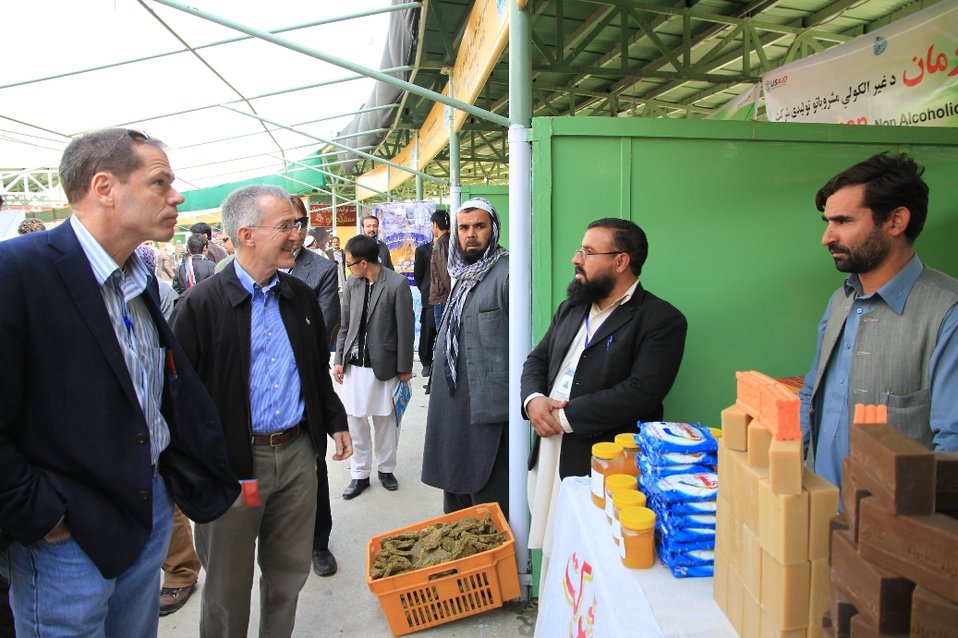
Ag.Fair, October 2013

USAID officials William Hammink (center-left) and Larry Sampler (left) speak with Naqibullah Hamdard and Azizullah, Deputy Director of Kaliwal Soap (center-right), during a visit to a wares booth at a Kabul agricultural goods exhibition.